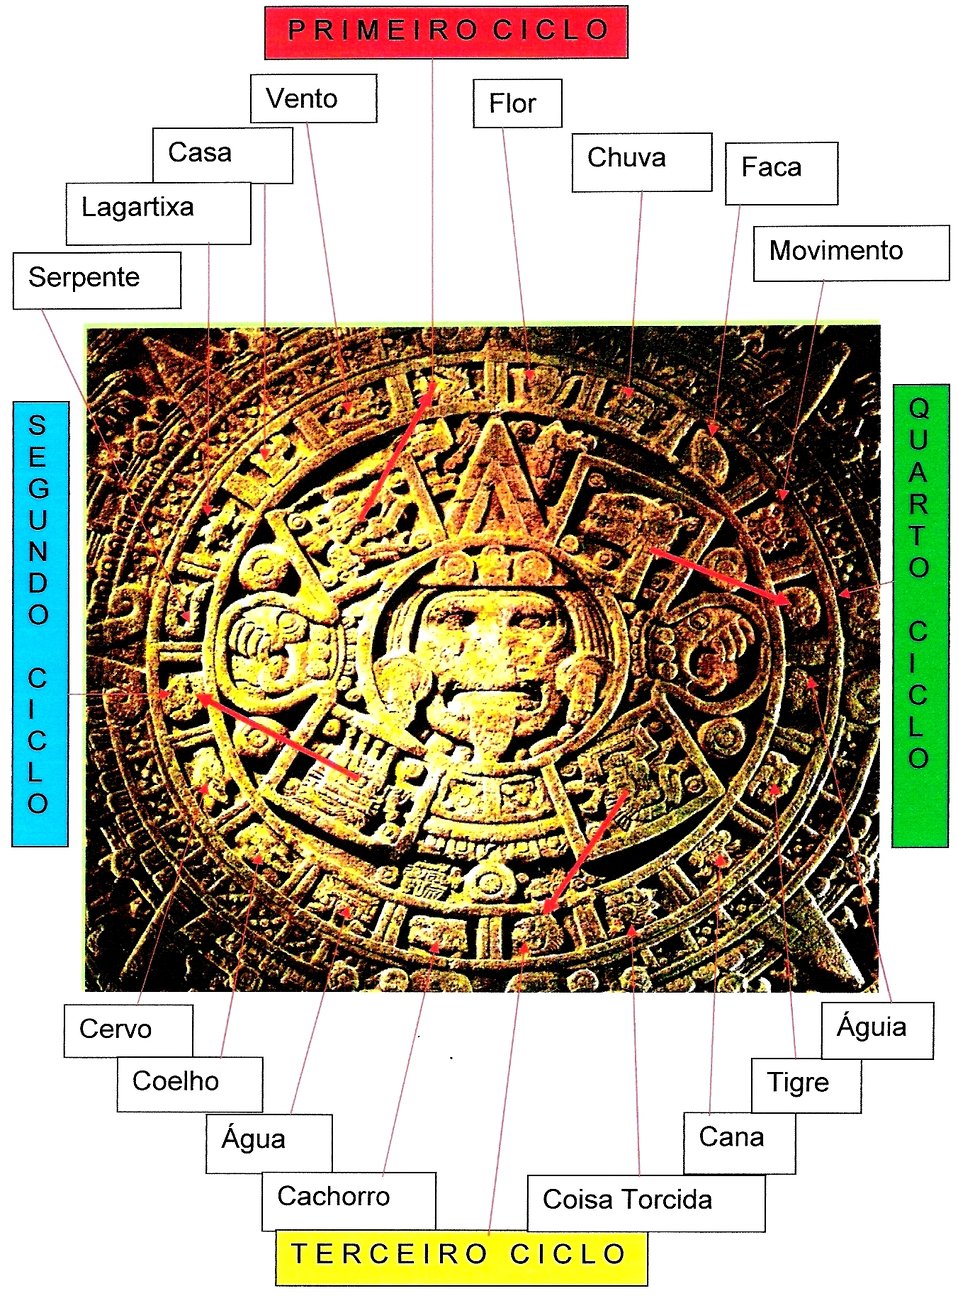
Cópia de fotografia com desenhos efetuados a partir da fotografia original da Pedra do Calendário Solar.